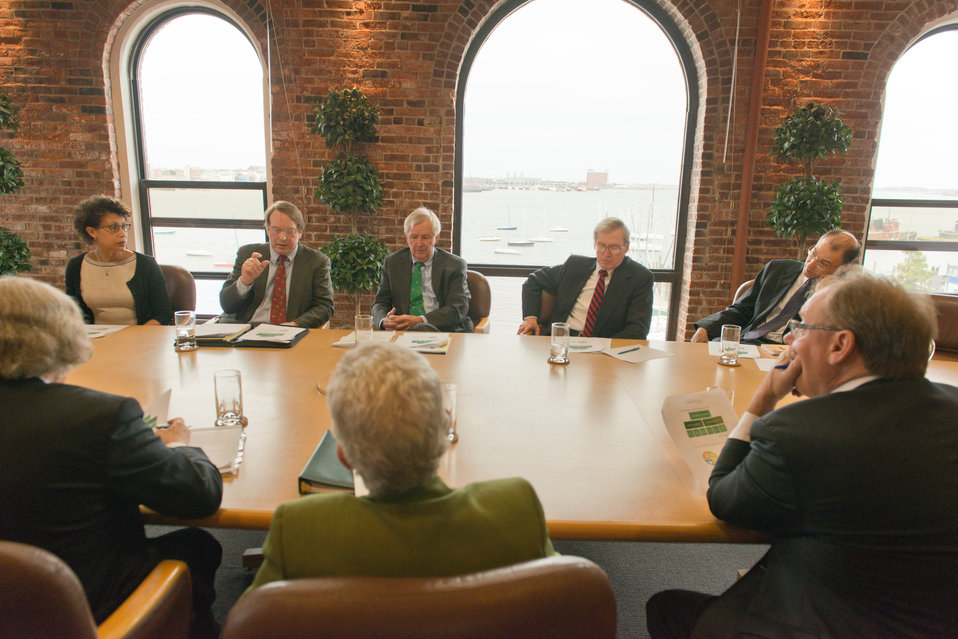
A Day In The Life of the EPA Administrator - April 22, 2014 2:44 pm

Administrator McCarthy, Department of Energy Secretary Moniz and EPA Regional Administrator Curt Spalding lead a discussion with the Boston Green Ribbon Commission, business and civic leaders charged by Mayor Walsh to help implement the city's Climate Action Plan.